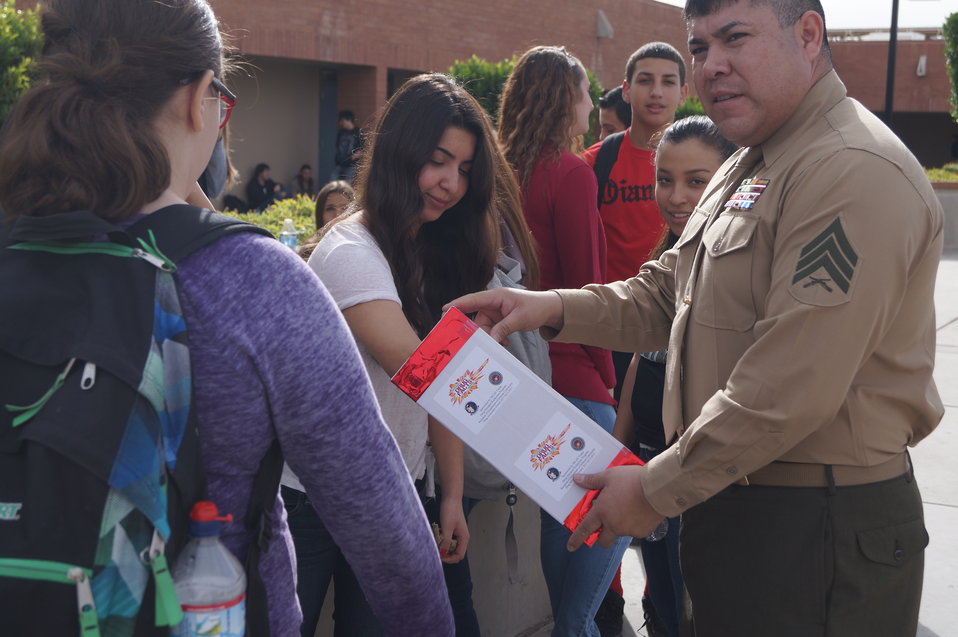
Nationa Drug Facts Week - CIBOLA HS

The Drug Demand Reduction Program out of Yuma, Arizona held numerous events at local schools to support NIDA's National Drug Facts Week, Jan. 27-Feb. 2 2014. Teens participated in drug awareness games, and helped to Shatter the Myths about teen substance abuse.